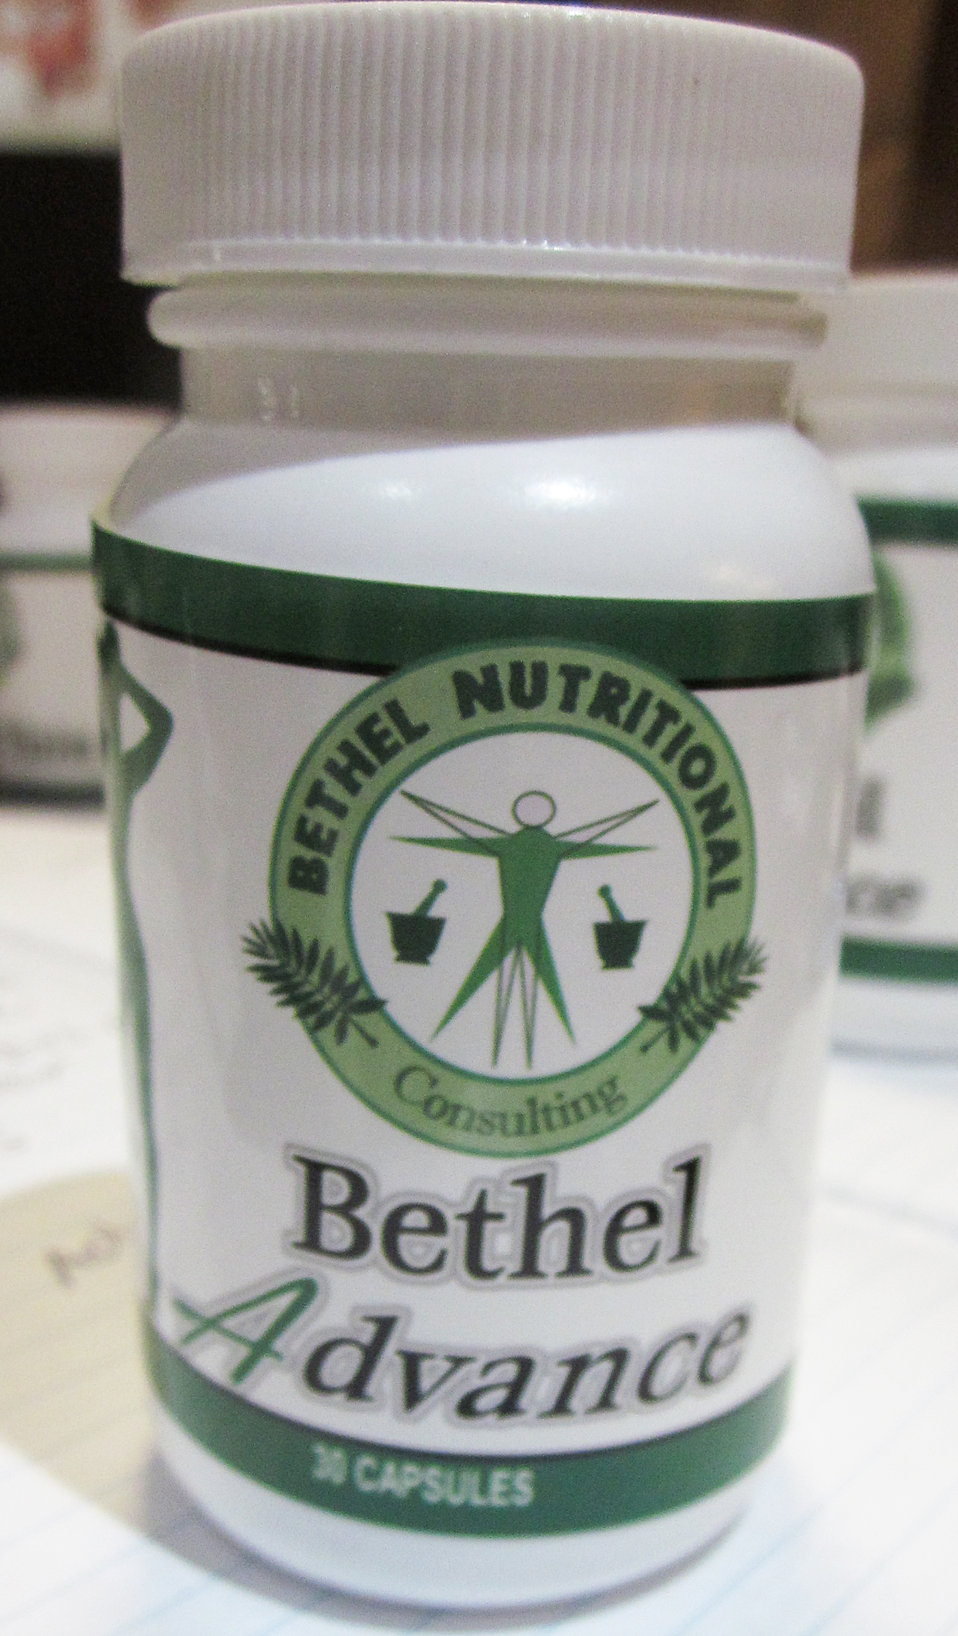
Bethel Advance

August 5, 2013 - The FDA is advising consumers not to purchase or use 'Bethel Advance,' a product promoted and sold for weight loss. The product was found to contain undeclared sibutramine and phenolphthalein. For more information, go to www.fda.gov/Safety/Recalls/ucm363939.htm

And read this Consumer Update: Beware of Fraudulent ‘Dietary Supplements’